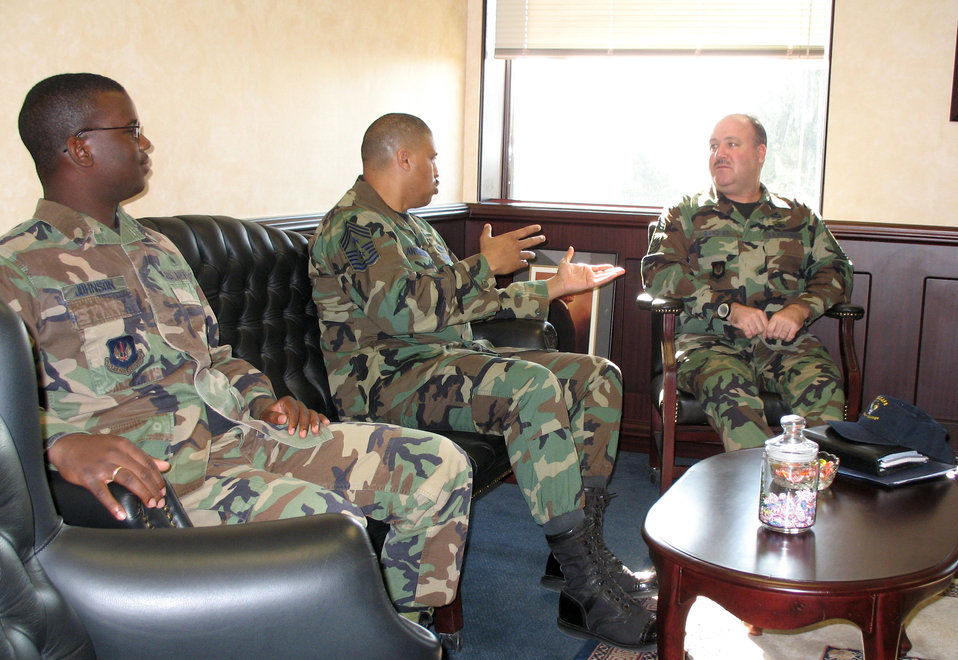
Incirlik Airmen shadow wing leaders

Senior Airman Andrew Johnson listens as Chief Master Sgt. Jeffrey Antwine visits with Chief Master Sergeant John Gardner. Chief Antwine is the 39th Air Base Wing command chief and Chief Gardner is the U.S. Air Forces in Europe's superintendent of logistics plans. Airman Johnson was participating in the 39th Air Base Wing's Shadow Program.